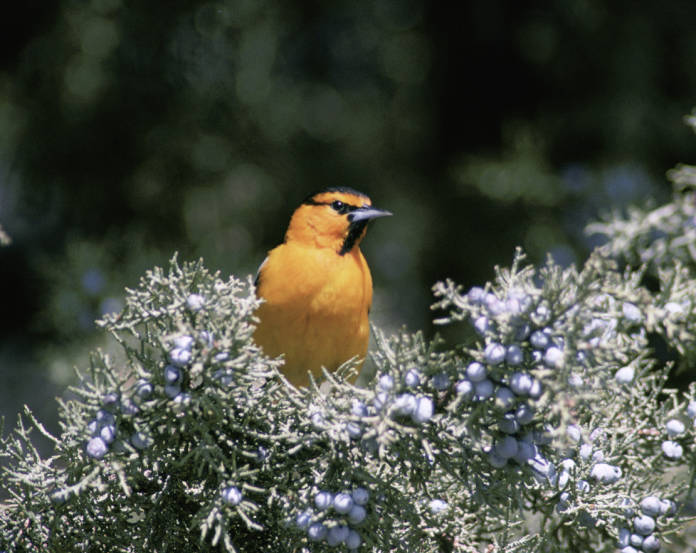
Bullock's oriole, Tule Lake National Wildlife Refuge